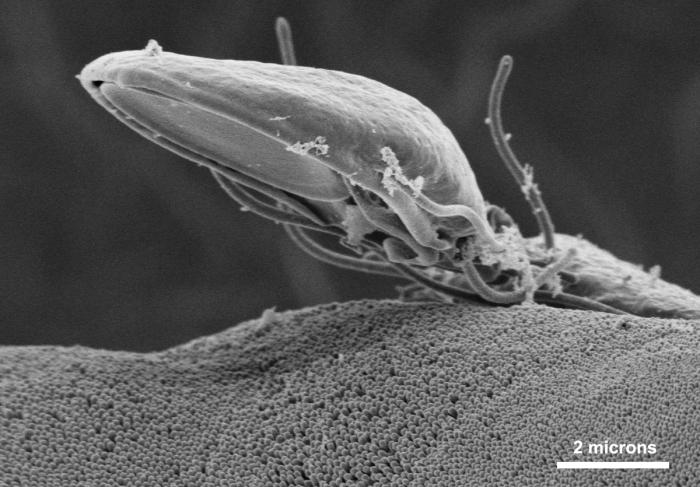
This scanning electron micrograph (SEM) depicted a Giardia specie intestinal protozoan on the microvillous border of intestinal epithelial cells. Each small circular profile under the protozoan represents the rounded tip of a single microvillous, and it is estimated that 2000 to 3000 microvilli cover the surface of a single intestinal epithelial cell. The ventral adhesive disk, which facilitates adherence to the intestinal surface, can be seen on the underside of the organism.